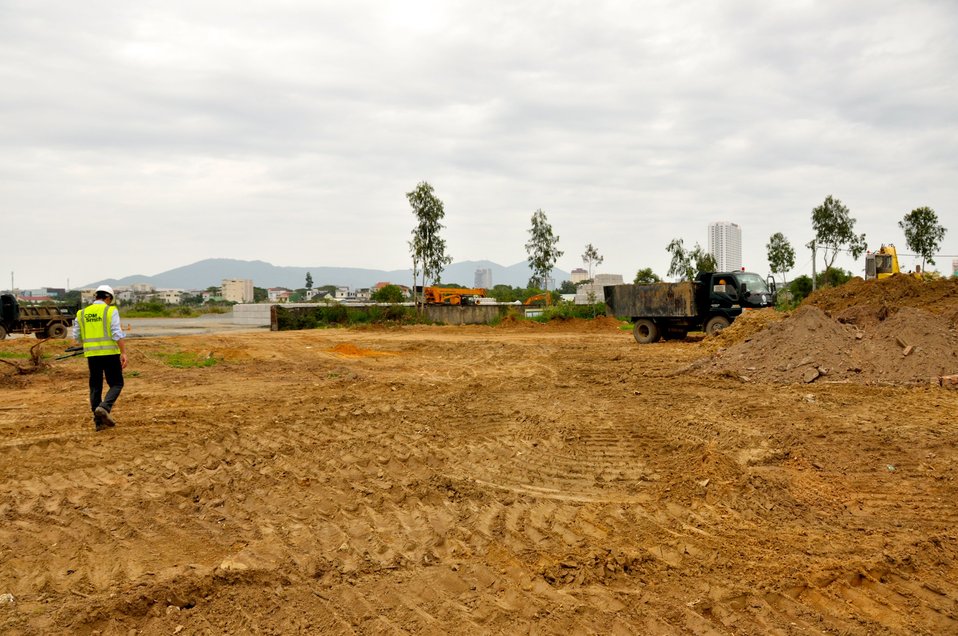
Site Preparation for Environmental Remediation of Dioxin Contamination at Danang Airport

Danang Airport, January 22, 2013